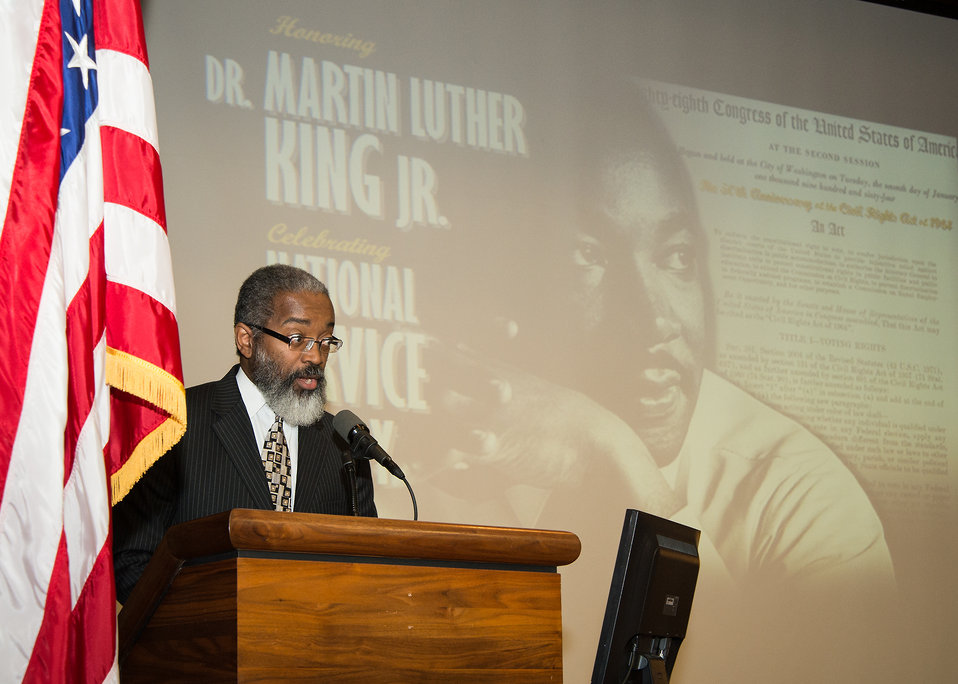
U.S. Department of Agriculture (USDA) Assistant Secretary for Administration (DA) Dr. Gregory Parham introduces Agriculture Deputy Secretary Krysta Harden at USDA's Dr. Martin Luther King Jr. and National Service Day in Washington, D.C. on Wednesday, Jan. 15, 2014.